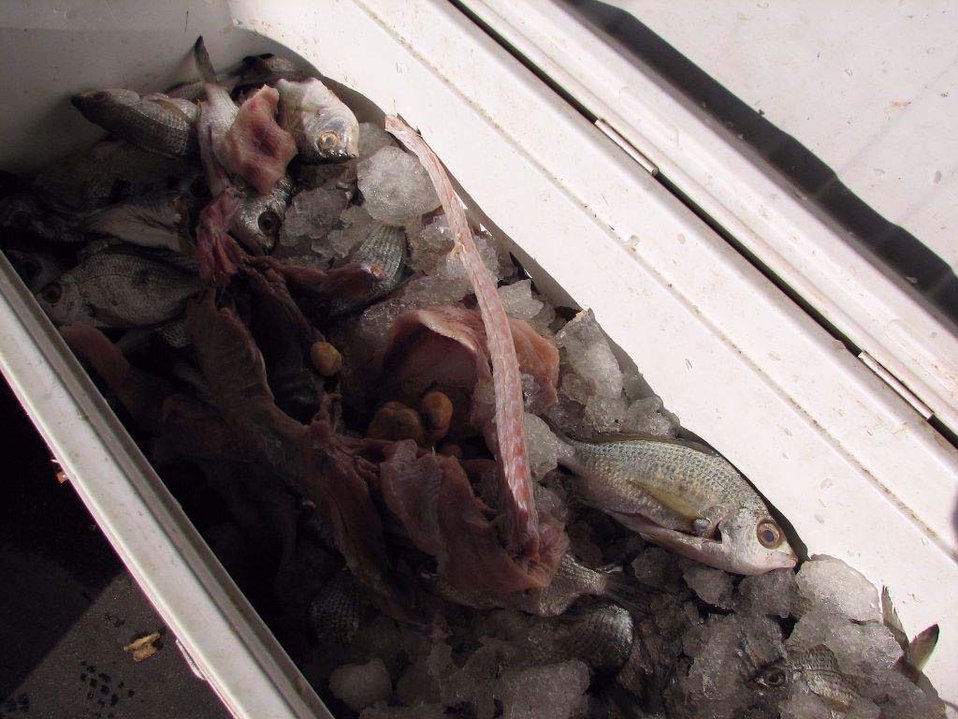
Iguana Meat 1

U.S. Customs and Border Protection officials seized this iguana meat on June 7, 2011, when Elidoro Soria Fonseca tried to smuggle it into the U.S. at the Otay Mesa Port of Entry. He had 159 pounds of the meat in his vehicle.